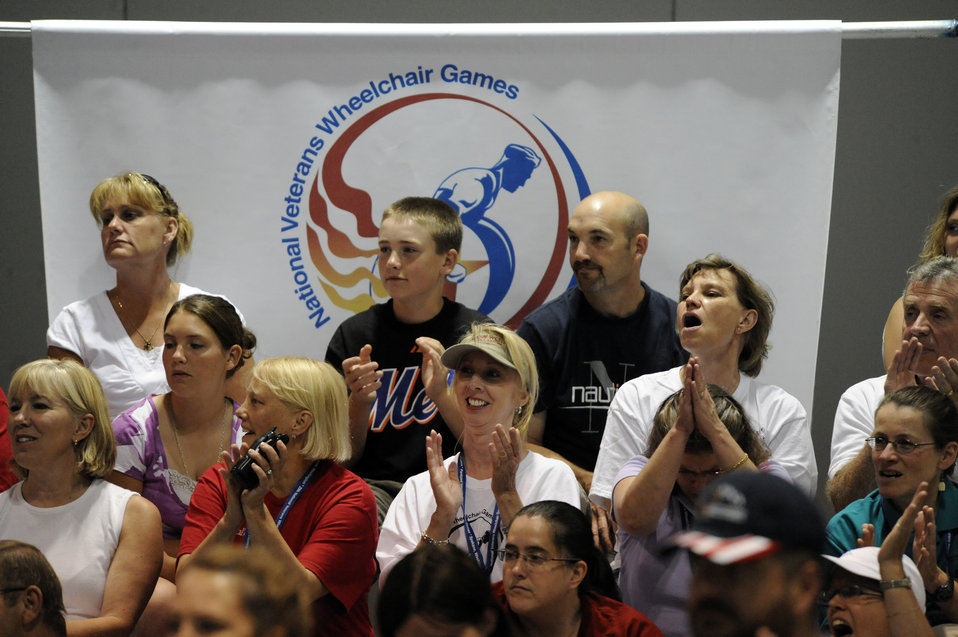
Volunteers ensure success at Veterans Wheelchair Games

Volunteers and fans cheer during the slalom super G competition of the 29th National Veterans Wheelchair Games July 16 in Spokane, Wash. Volunteers play an important role in the games and come from all over the United States to help out.